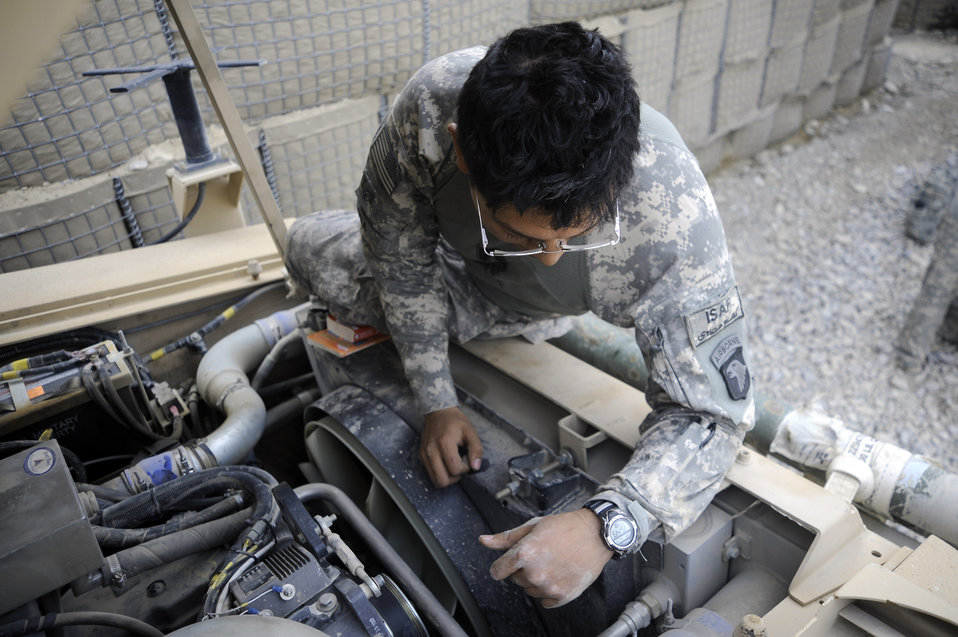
Vehicle maintainers travel rough road

Staff Sgt. Nester Sosa inspects a medium tactical vehicle after combat operations April 20 Forward Operating Base Herrara, Afghanistan. Sergeant Sosa is a vehicle maintainer assigned to the Paktya Provincial Reconstruction Team from Forward Operating Base Gardez, Afghanistan. He is deployed from the 97th Logistics Readiness Squadron from Altus Air Base, Okla.